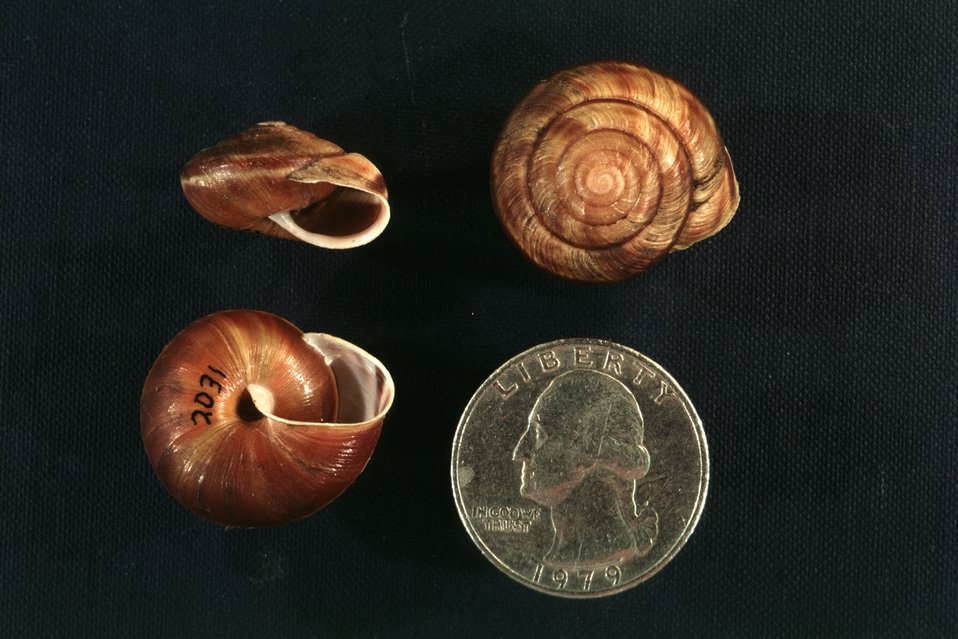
Dalles Sideband (Monadenia fidelis minor)